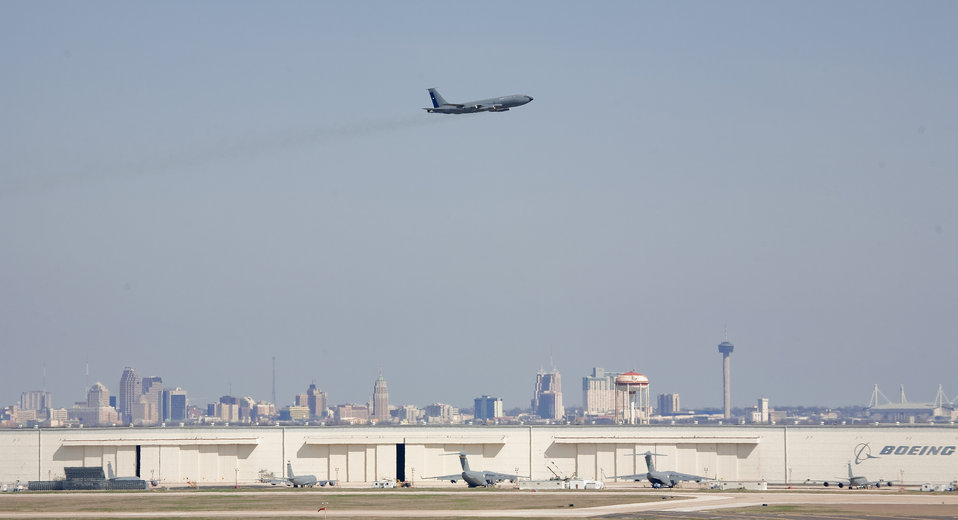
Chilean air force's latest tanker

Above Port San Antonio, a KC-135E Stratotanker completes a test flight over San Antonio on Feb 13, 2010. It is the first of three tankers to be delivered to the government of Chile through the U.S. foreign military sales (FMS) program. These tankers will augment their current fleet of Boeing 707-based tankers. The San Antonio Boeing Support Systems site specializes in several maintenance and modification processes for U.S. and international military customers. The two other tankers are at Boeing's San Antonio site for programmed depot maintenance before being delivered later this year. The aircraft is seen with transitional marking showing the permanent Chilean air force tail markings, and temporary decals of the U.S. Air Force on other areas for the delivery flight to Chile, when the aircraft arrived in Chile on Feb 16 the decals were peeled off revealing all the Chilean air force marking. FMS is managed and operated by DoD on a no-profit and no-loss basis. Countries and international organizations participating in the program pay for defense articles and services at prices that recoup the actual costs incurred by the United States. Air Force Security Assistance Center oversees system sales and support for more than 170 models of aircraft - a fleet totaling more than 6,600.